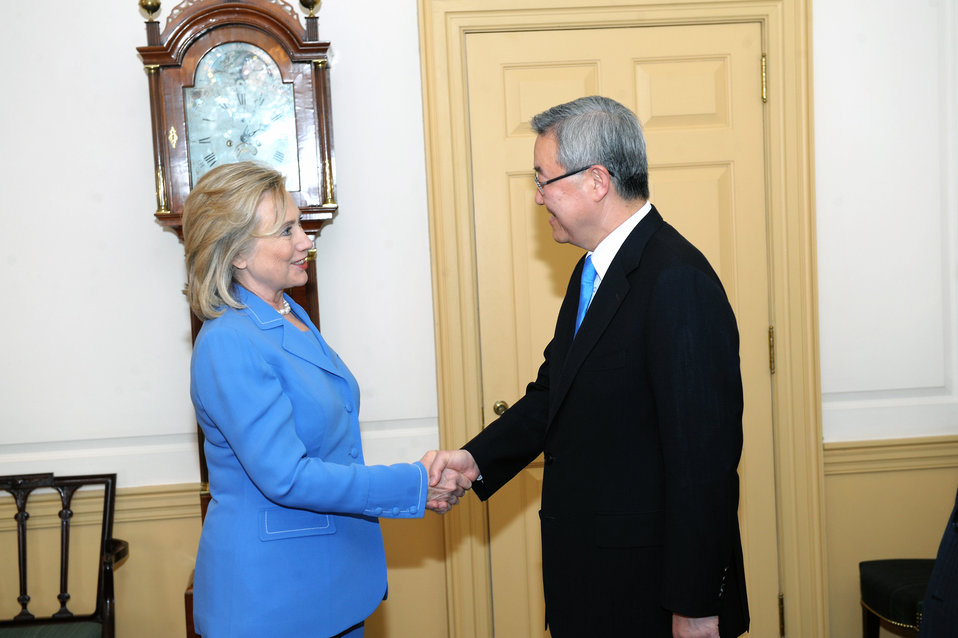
Secretary Clinton Shakes Hands With Korean Foreign Minister Kim Sung-Hwan

U.S. Secretary of State Hillary Rodham Clinton shakes hands with Korean Foreign Minister Kim Sung-Hwan, at the U.S. Department of State in Washington, D.C., on June 24, 2011.